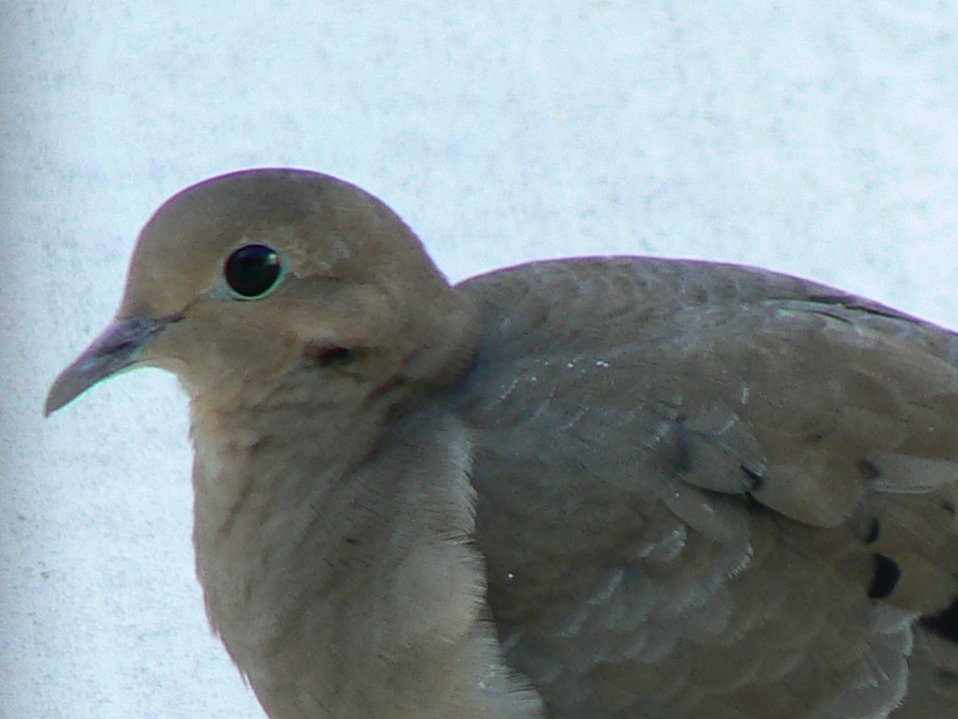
Mourning dove at Cape May National Wildlife Refuge.